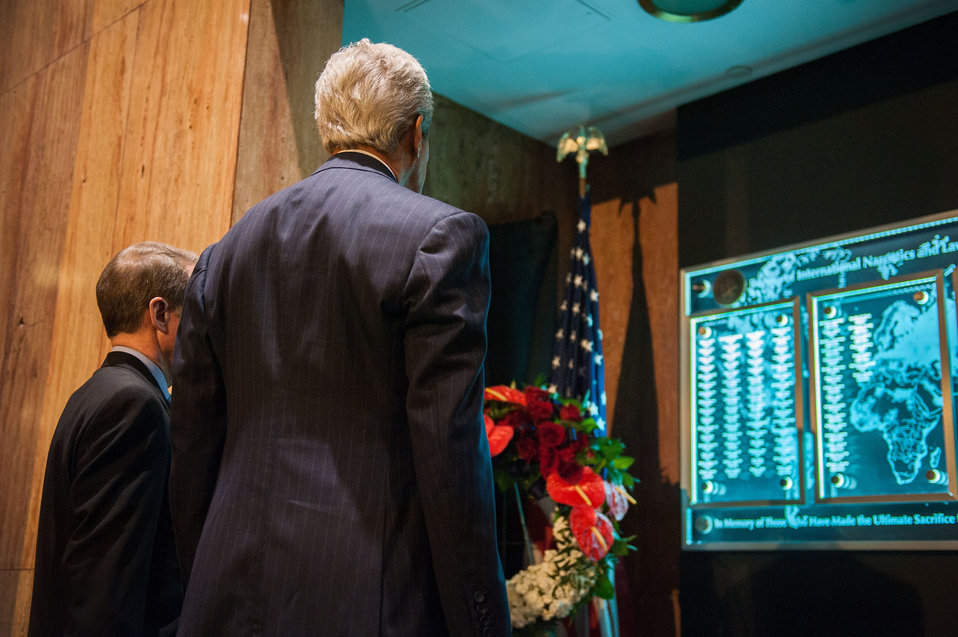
Secretary Kerry Participates in the Dedication of the Bureau of International Narcotics and Law Enforcement Affairs Memorial Wall Ceremony

With Assistant Secretary of State for International Narcotics and Law Enforcement Affairs William R. Brownfield, U.S. Secretary of State John Kerry participates in the dedication of the Bureau of International Narcotics and Law Enforcement Affairs memorial wall ceremony at the U.S. Department of State in Washington, D.C., on June 12, 2014. The memorial honors personnel who have died while participating in overseas criminal justice and counternarcotics assistance programs on behalf of the United States.